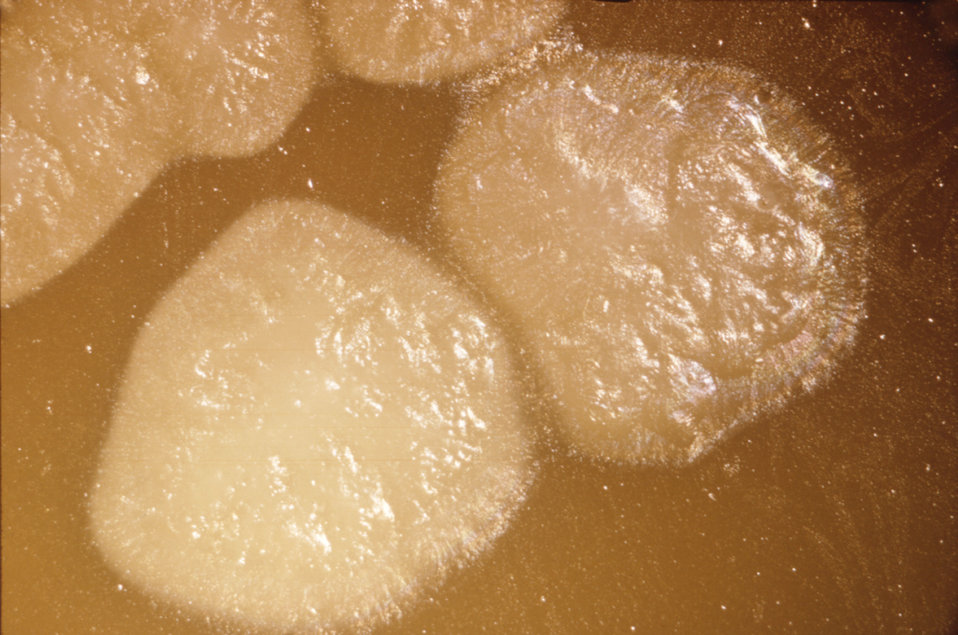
These are Clostridium botulinum Type E colonies displaying an opaque zone grown on a 48hr egg yolk agar plate; Mag. 1.9X.